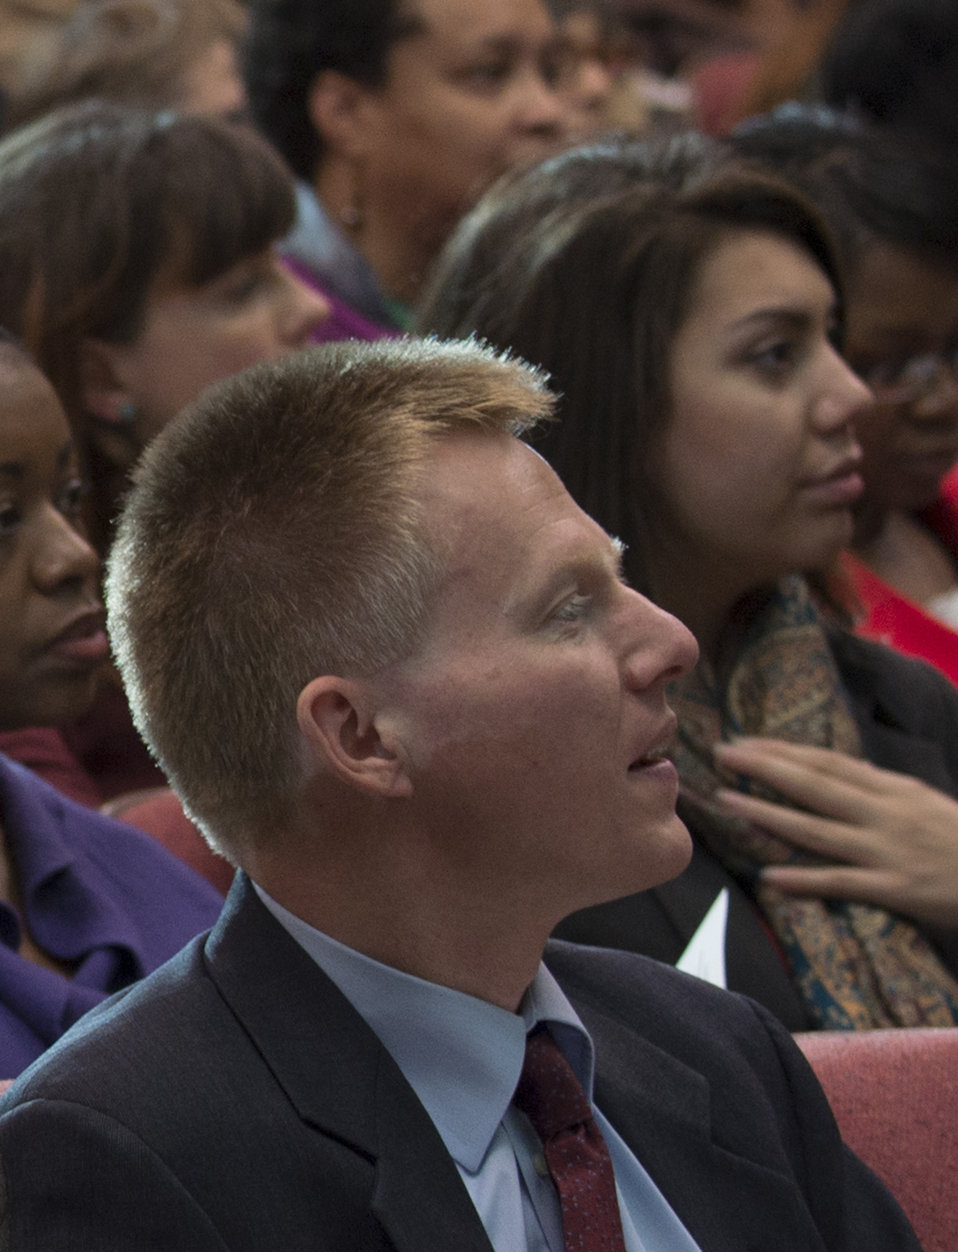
U.S. Department of Agriculture (USDA) StrikeForce Initiative Director Max Finberg at the 2013 American Indian and Alaska Native Heritage Observance at the USDA on Thursday, Nov. 14, 2013 in Washington, D.C. The theme of this year’s event was “Guiding Our Destiny with Heritage and Traditions.”